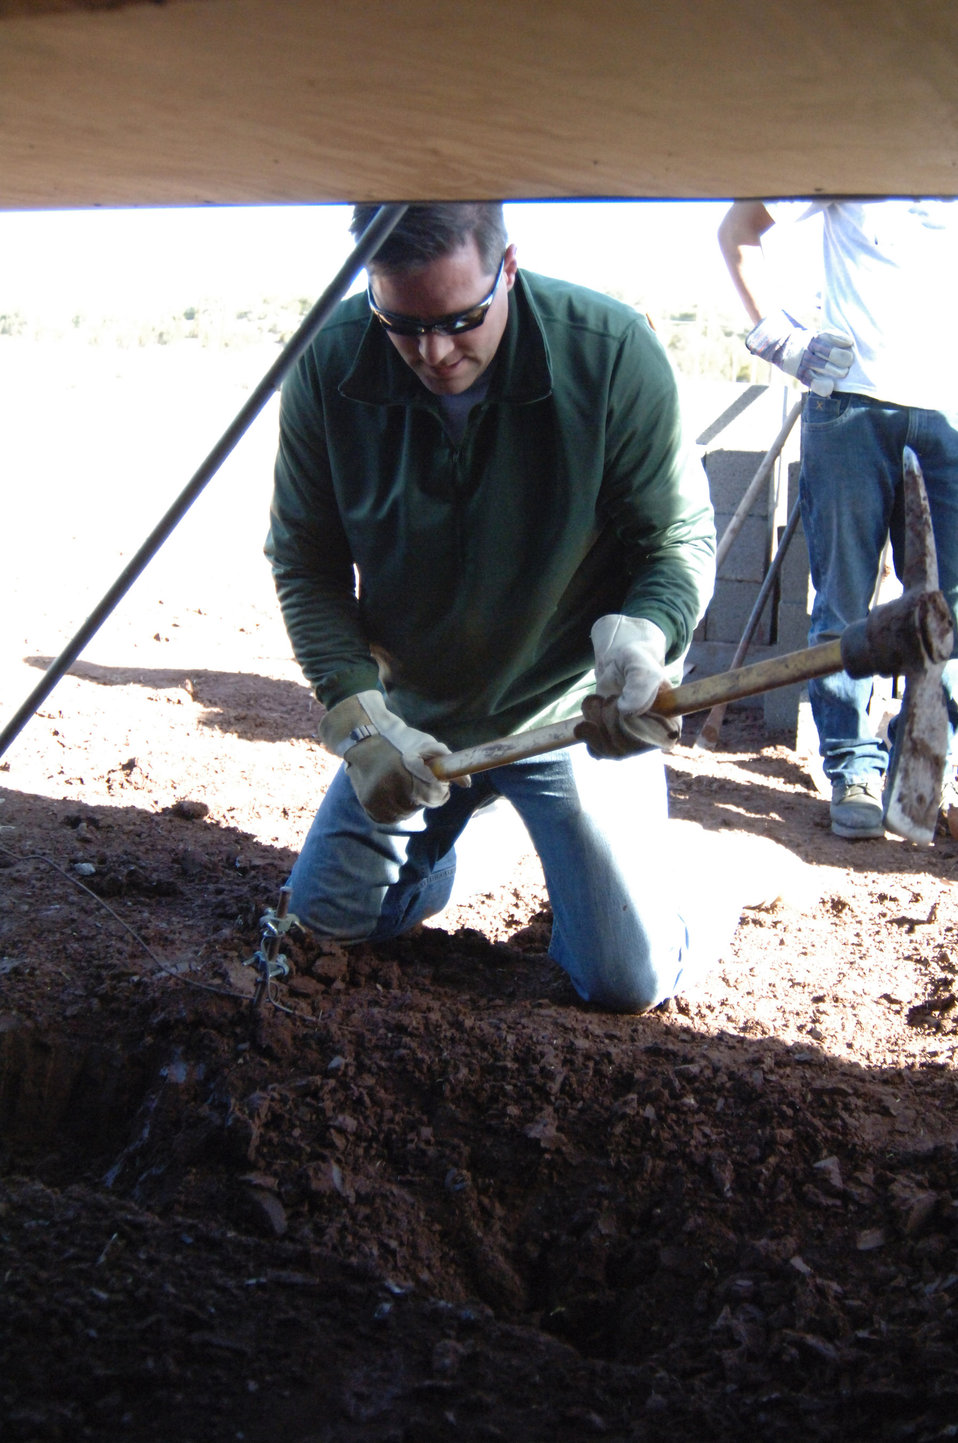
AF Academy volunteers renovate Navajo home

Maj. John Christ puts his civil engineering knowledge to work as he uses a pick-axe to dislodge frozen ground at a volunteer worksite March 26 in Navajo, N.M. The frozen soil would be replaced by cinderblocks and concrete, to become the foundation of a home for a Navajo family. Major Christ is an instructor at the Air Force Academy's Department of Civil Engineering. He and a group of 20 cadets, faculty and family members volunteered to work at the reservation during the Academy's spring break.